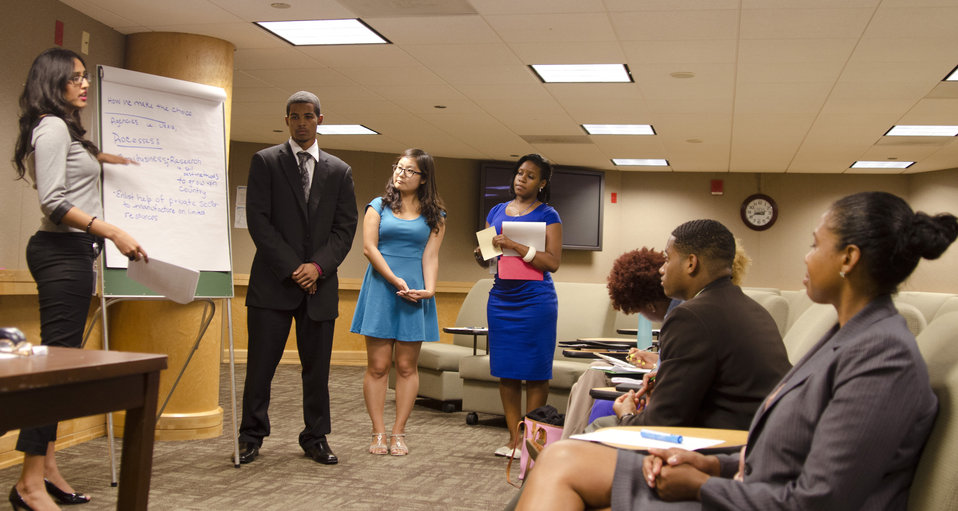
Interns at the U.S. Department of Agriculture (USDA) Internship Program Listening Session present their findings in USDA’s South Building in Washington, D.C. on Monday, August 7, 2012. The purpose of the USDA Internship Program Listening Session is to provide interns with a forum to express their views about their experiences as a USDA intern. These young people will be among the most promising future USDA leaders and participate in an individual discussion and group session that will develop leadership skills.